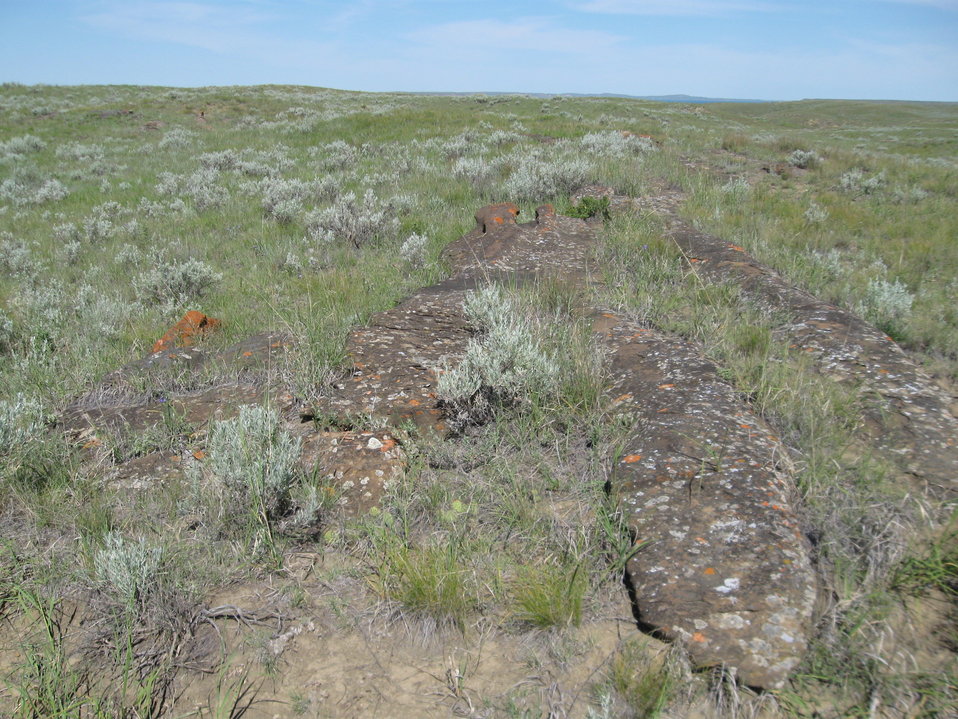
Sand Arroyo

Rock formation on the east side of CMR National Wildlife Refuge.